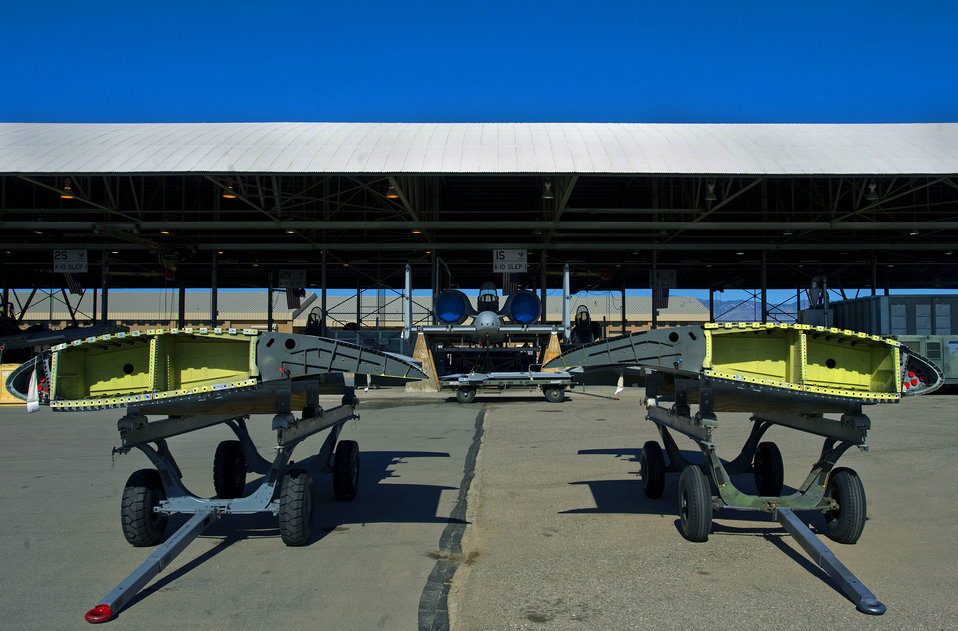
A-10 Hog Up

Newly modified A-10 Thunderbolt II wings await installation Dec. 17, 2009, at the 309th Aerospace Maintenance and Regeneration Group facility at Davis-Monthan Air Force Base, Ariz. A-10s are undergoing an upgrade, affectionately called the